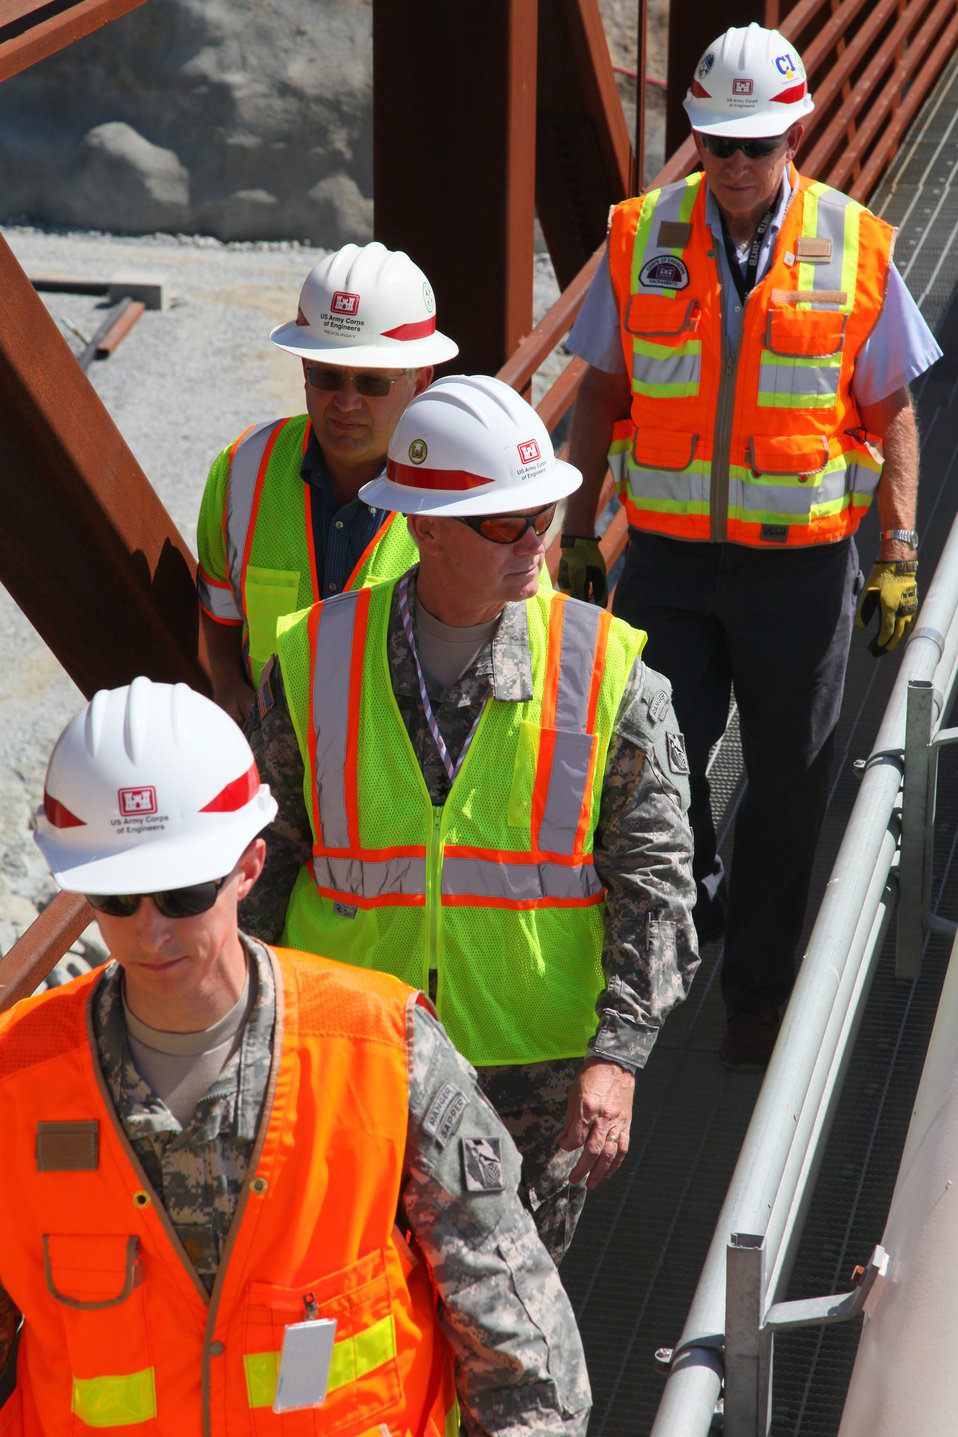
Maj. Gen. Michael Walsh tours Folsom Dam auxiliary spillway

Maj. Gen. Michael J. Walsh (center), Deputy Commanding General for Civil and Emergency Operations for the U. S. Army Corps of Engineers, tours the construction site for the new Folsom Dam auxiliary spillway in Folsom, Calif., July 18, 2012. The Sacramento District is building the spillway in cooperation with the U.S. Bureau of Reclamation, the Central Valley Flood Protection Board and the Sacramento Area Flood Control Agency to improve the safety of the existing dam and reduce flood risk for the greater Sacramento area. Walsh toured the project during a visit to Sacramento to learn more about the Corps’ projects in Northern California. (U.S. Army photo illustration by Michael J. Nevins/Released)